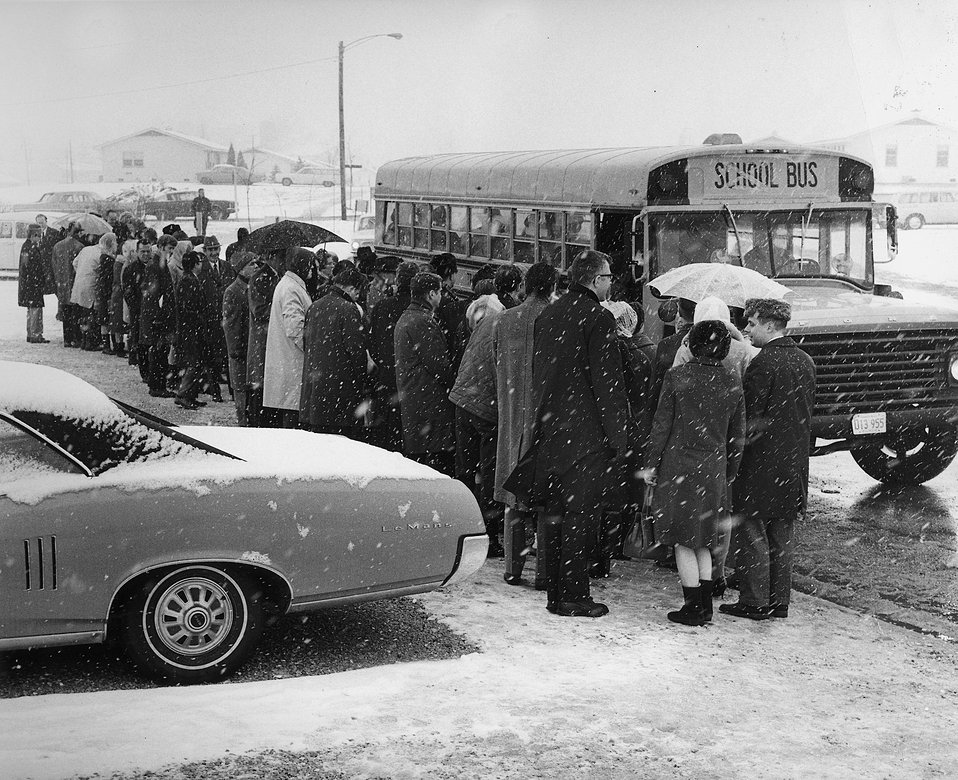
Guests board a bus to take them from the National Accelerator Village to the site of the Linac groundbreaking. 1968